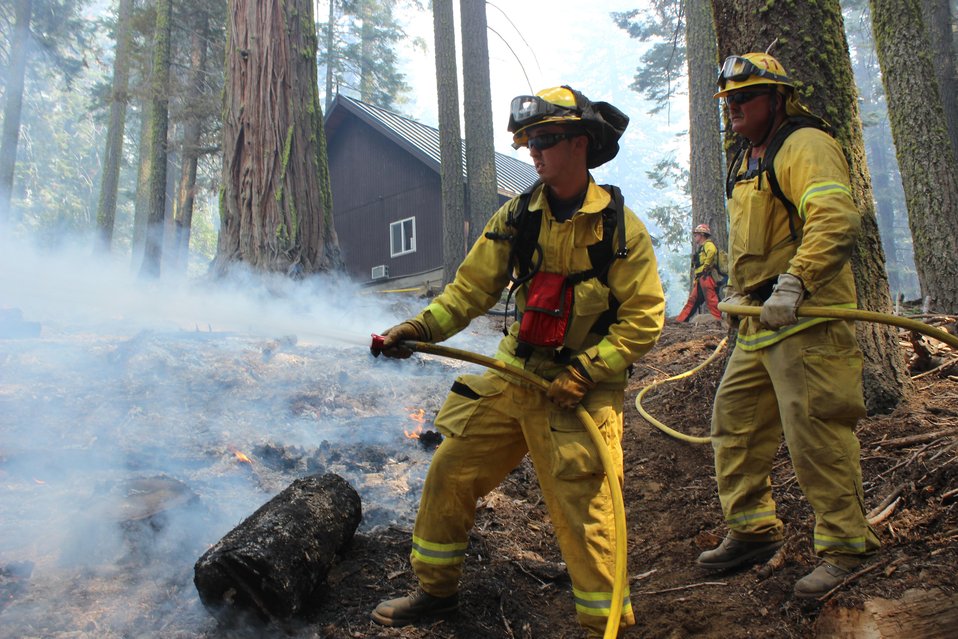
Engine Crews hose down a hotspot at Crane Flat Station at the Rim Fire. The Rim Fire in the Stanislaus National Forest near in California began on Aug. 17, 2013 and is under investigation. The fire has consumed approximately 235,841 acres and is 70% contained.